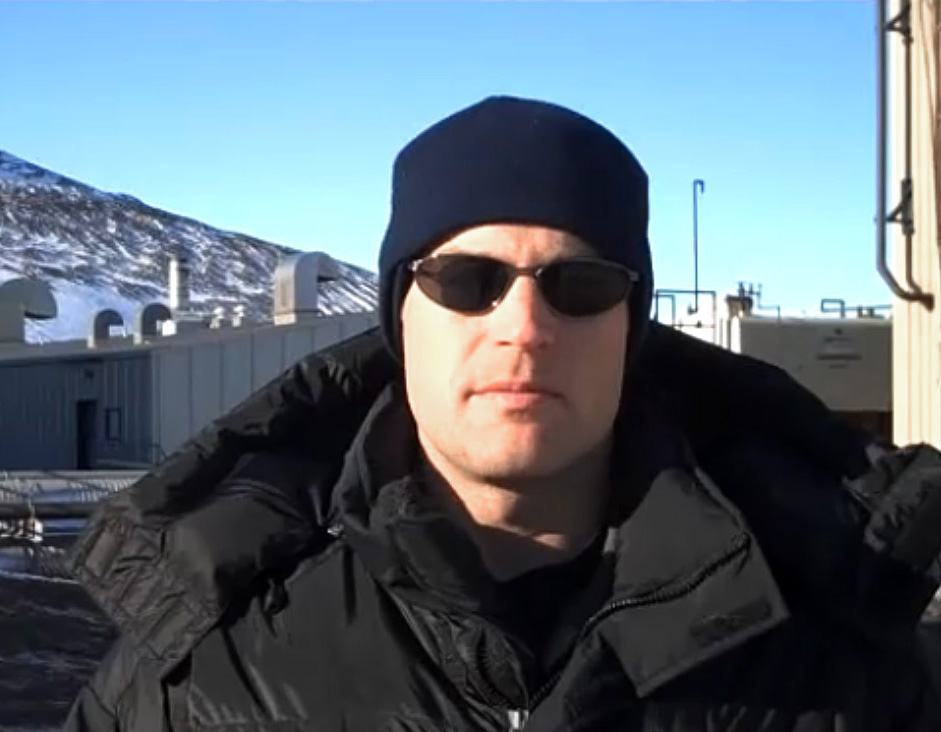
Airmen support Antarctica mission

Capt. Jon Waller records a video log of his experiences Oct. 30, 2010, while flying C-17 Globemaster III aircraft into McMurdo Station, Antarctica, in support of Operation Deep Freeze. Captain Waller is a C-17 instructor pilot with the 62nd Airlift Wing at Joint Base Lewis-McChord, Wash.